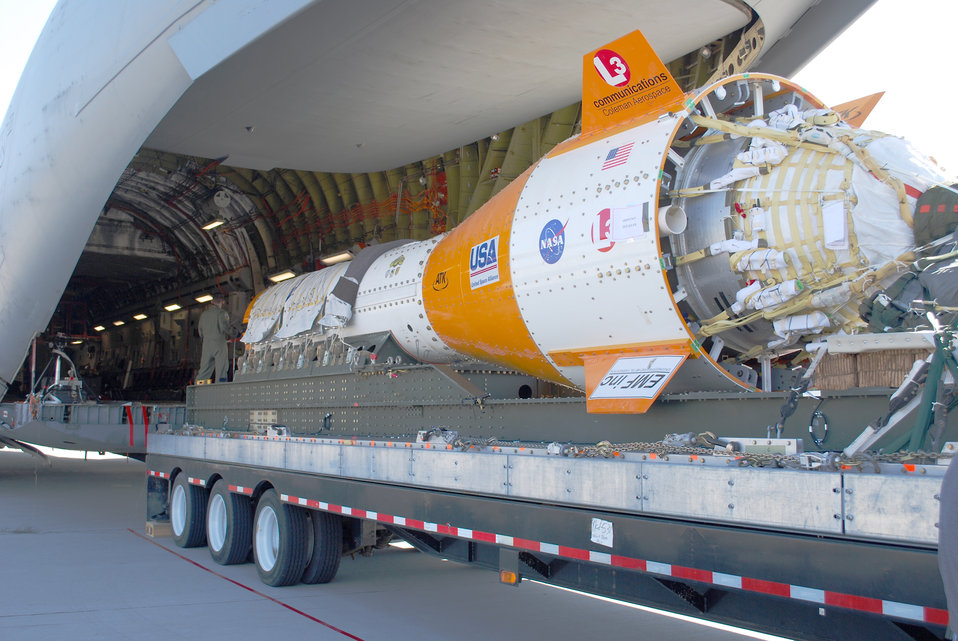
Big load record

A jumbo drop test vehicle, or JDTV, is loaded onto a C-17 Globemaster III April 14, 2010, at Edwards Air Force Base, Calif. The 77,000-pound JDTV flew over the Yuma Testing Grounds in Arizona and tested parachutes for NASA's Ares I launch vehicle's solid rocket booster. The flight set a record for the heaviest single load dropped out of a C-17.